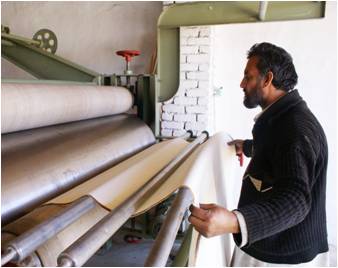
Facility Improves Local Textile Quality

With limited job opportunities and high poverty in remote areas of Afghanistan, local people consider joining the insurgency. Addressing this issue in the Behsud District of Nangarhar Province of Afghanistan, USAID’s Incentives Driving Economic Alternatives for the North, East, and West (IDEA-NEW) program supported establishing a textile processing facility to generate local level employment and strengthen the textile value chain.

An Afghan trader invested in the main machinery for the textile processing facility and IDEA-NEW supported the startup and installation. The facility offers free washing, pressing, dyeing, and labeling services to more than 200 small and medium-sized textile-weaving enterprises in Rodaat, Batikot, Kama, and Dare Noor Districts of Nangarhar Province.

Prior to establishing this facility, most of the weavers sold unprocessed products at lower prices, while some took their products to Pakistan for processing. With the emergence of the textile processing facility, textile weavers can increase their production capacities, launch new varieties of products, and compete with imported varieties on the market.

“I send my textiles every week to the new processing facility, which after pressing and dyeing turns them to much higher quality products—something really incredible. It has now been a month that we’re receiving this service, which has almost doubled the price of our products in the market,” said Khyber Gul, owner of a home-based textile weaving facility in Rodaat District.

In addition to creating permanent jobs for 11 local employees, the facility indirectly benefits hundreds of weaver families, also supported by IDEA-NEW. During the next two years, the IDEA-NEW project will continue to link the facility with weavers and support the entire textile value chain, providing locally produced textiles to replace imports.